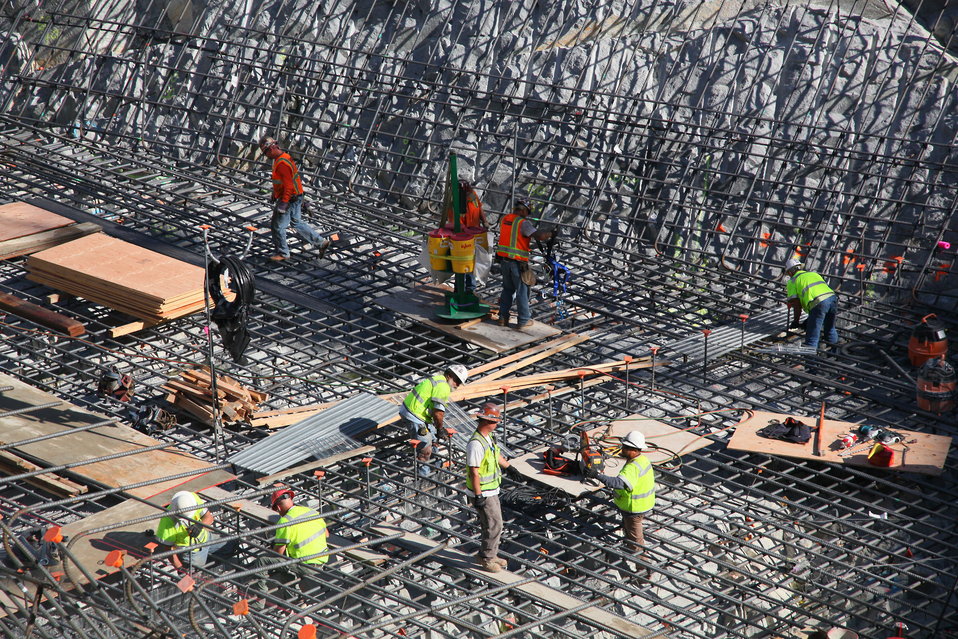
Rebar before concrete

Working in a maze of a steel rebar, contractors for the U.S. Army Corps of Engineers Sacramento District construct a support system for concrete placement for the auxiliary spillway at the Folsom Dam Joint Federal Project in Folsom, Calif., June 14, 2012. The Folsom Dam Joint Federal Project is a joint effort of the Corps, U. S. Bureau of Reclamation, the Central Valley Flood Protection Board and the Sacramento Area Flood Control Agency to improve the safety of the current dam and reduce flood risk for the greater Sacramento area.